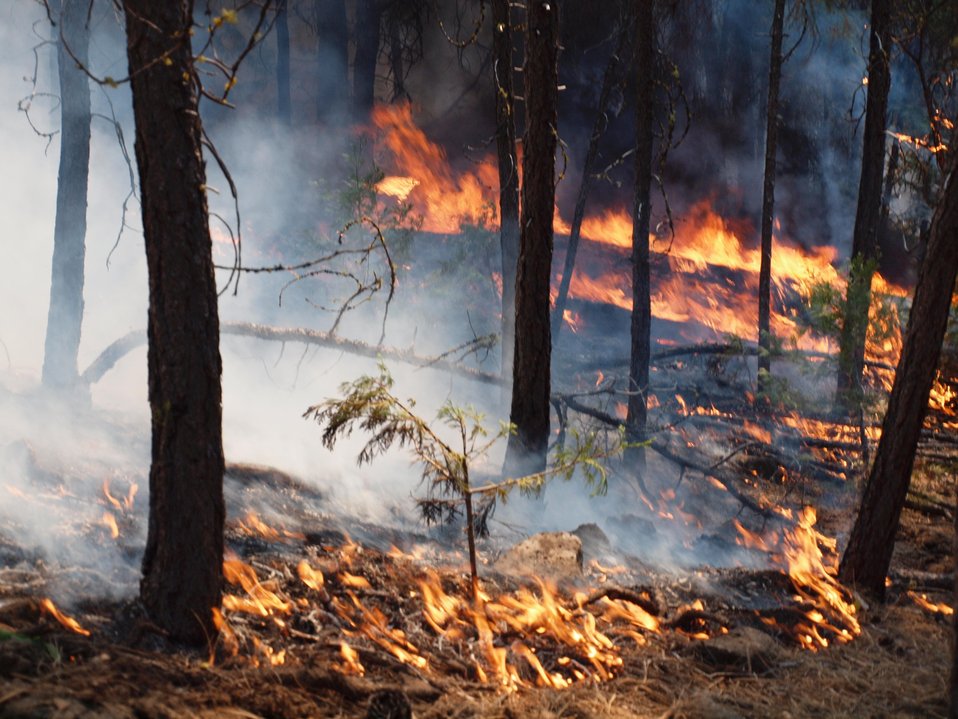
The Green Ridge Fire in the Deschutes National Forest near Sisters, OR began on Jul. 31, 2013 by lightning has consumed approximately 1,510 acres and is approximately 95% contained.